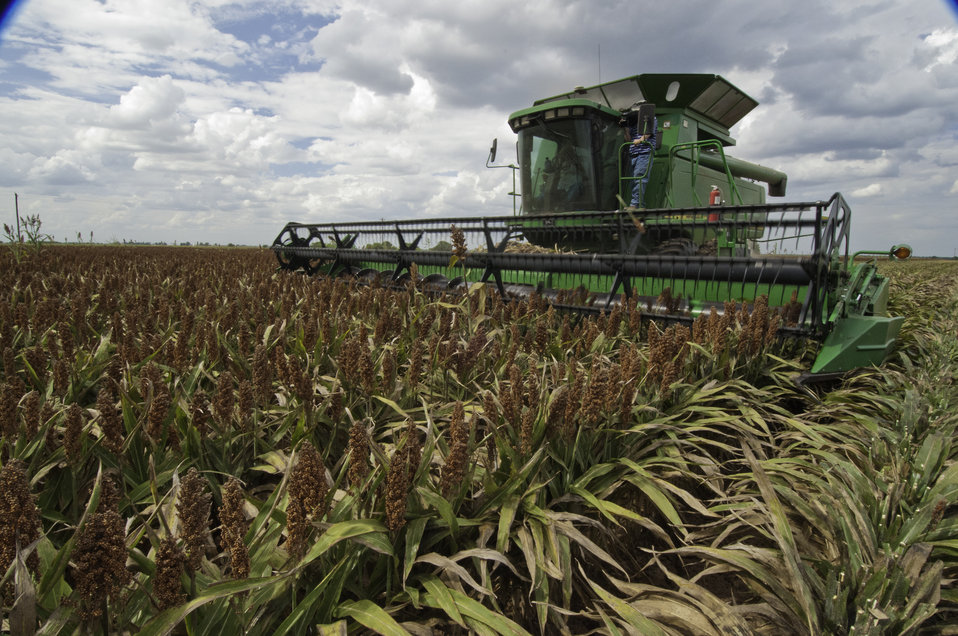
Grain sorghum is harvested on the Wilder Farms in Navasota, TX on Aug. 23, 2013.